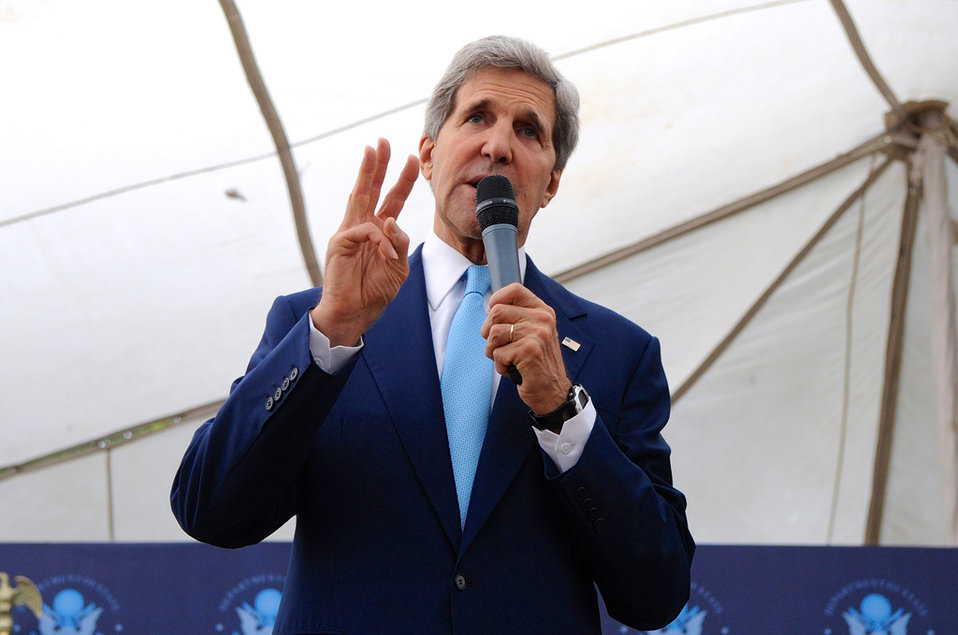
Secretary Kerry Addresses Embassy Islamabad Staff

U.S. Secretary of State John Kerry addresses staffers at the U.S. Embassy in Islamabad, Pakistan, on August 1, 2013.